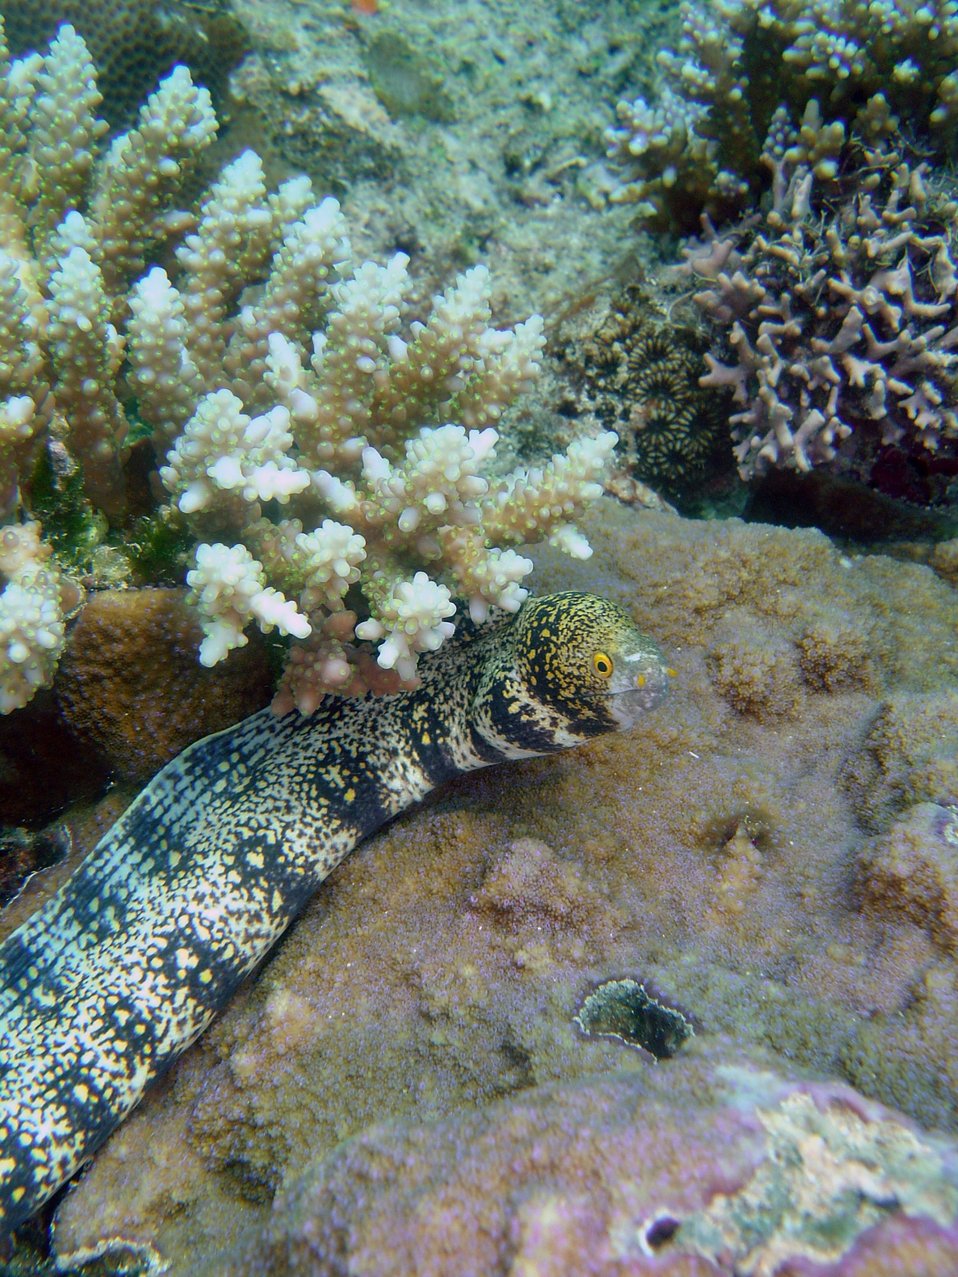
Snowflake moray (Echidna nebulosa)